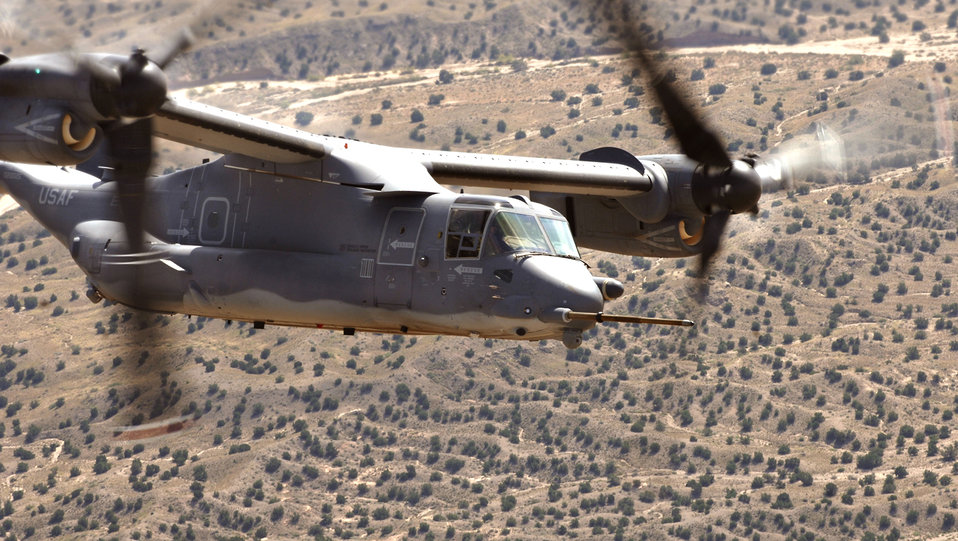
Pilots thrilled by CV-22 capabilities

A CV-22 Osprey flies an air-refueling mission Oct. 5 over New Mexico. The CV-22 Osprey is a tiltrotor aircraft that combines the vertical takeoff, hover and vertical landing qualities of a helicopter with the long-range, fuel efficiency and speed characteristics of a turboprop aircraft.